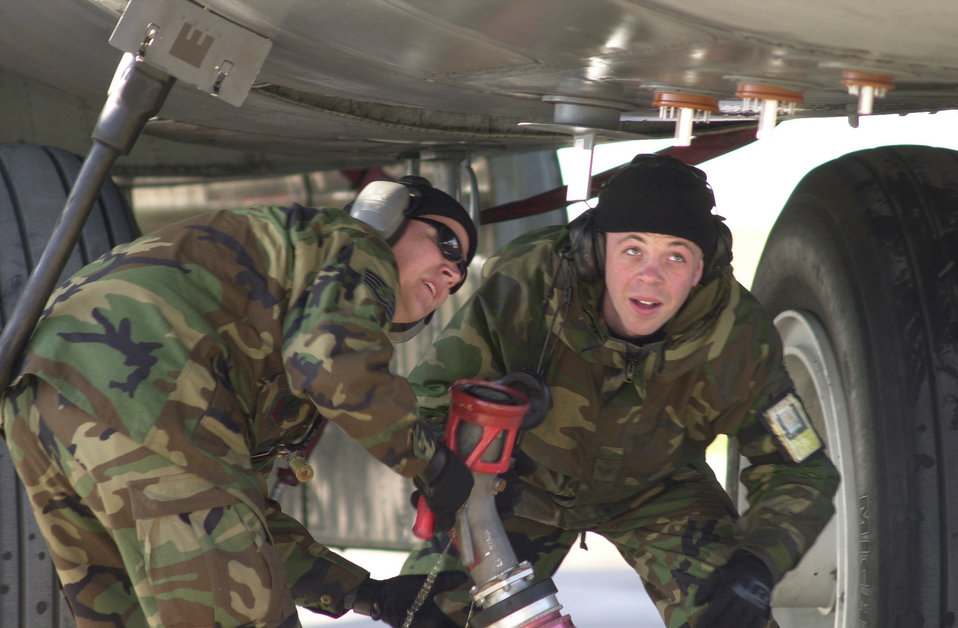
Top it off

OPERATION IRAQI FREEDOM -- Staff Sgt. Andrew Poole and Senior Airman Nathan Davis, crew chiefs from Minot Air Force Base, N.D., secure a fuel hose underneath a B-52 Stratofortress enabling the fuels specialist to